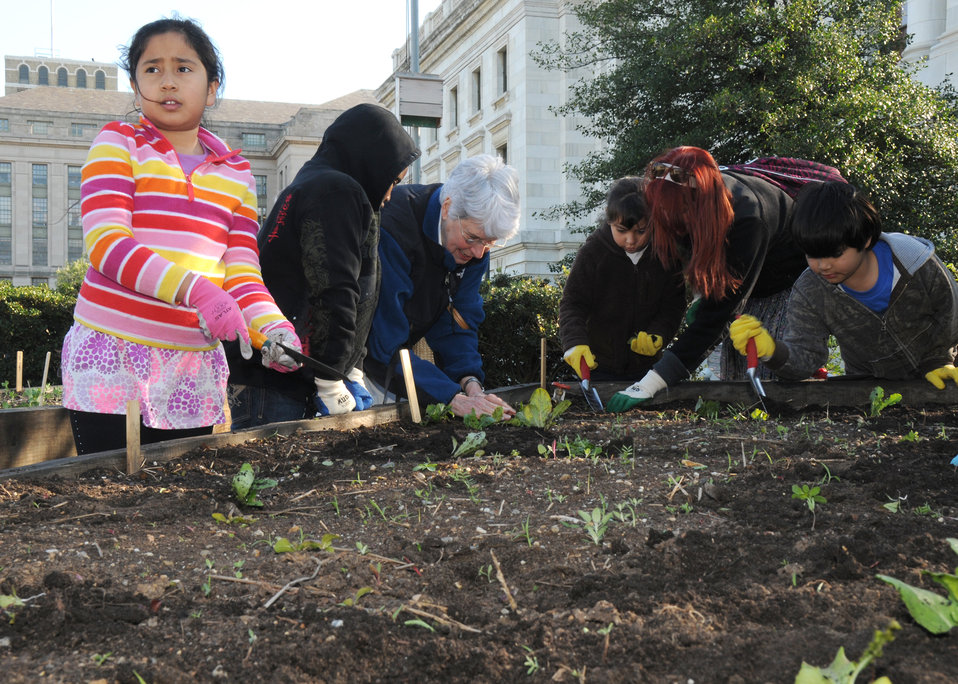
Young people from the non-profit Jubilee Housing organization’s after school youth services program help U.S. Department of Agriculture (USDA) employee’s plant vegetables and herbs in the People’s Garden on Friday, Apr. 9, 2010. The Jubilee Youth Services offers a safe place for learning and fellowship for young people through a supervised after-school program. Participating in the planting are Carol Martin, Program Coordinator, Early Start Program, Jubilee Youth Services, and Liz Gossens, Program Associate, Jubilee Youth Services. USDA photo 10di1300-177